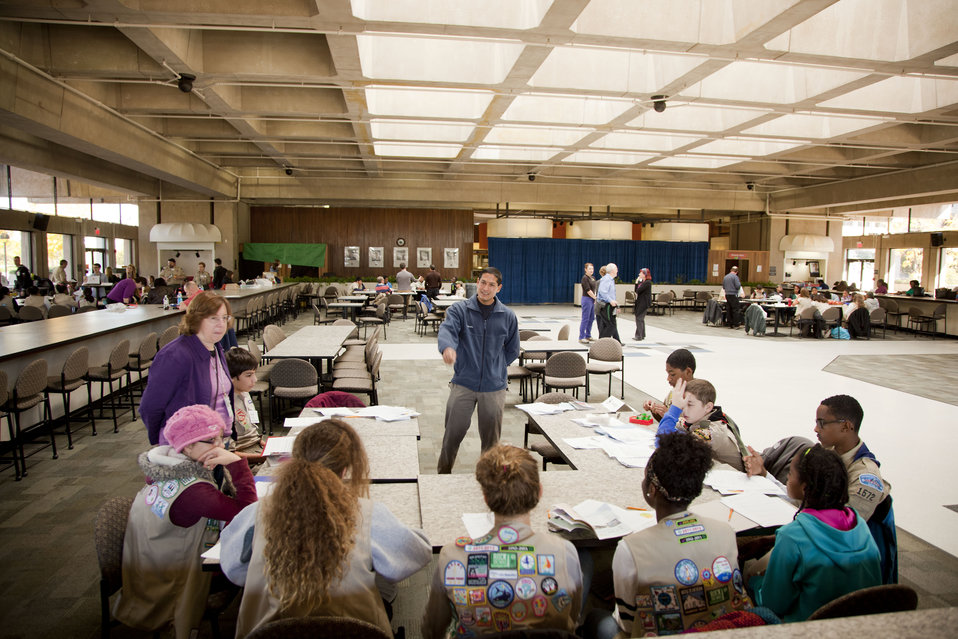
An adult volunteer talks with Scouts about energy -- including saving, producing and using it wisely -- as part of a merit patch class.